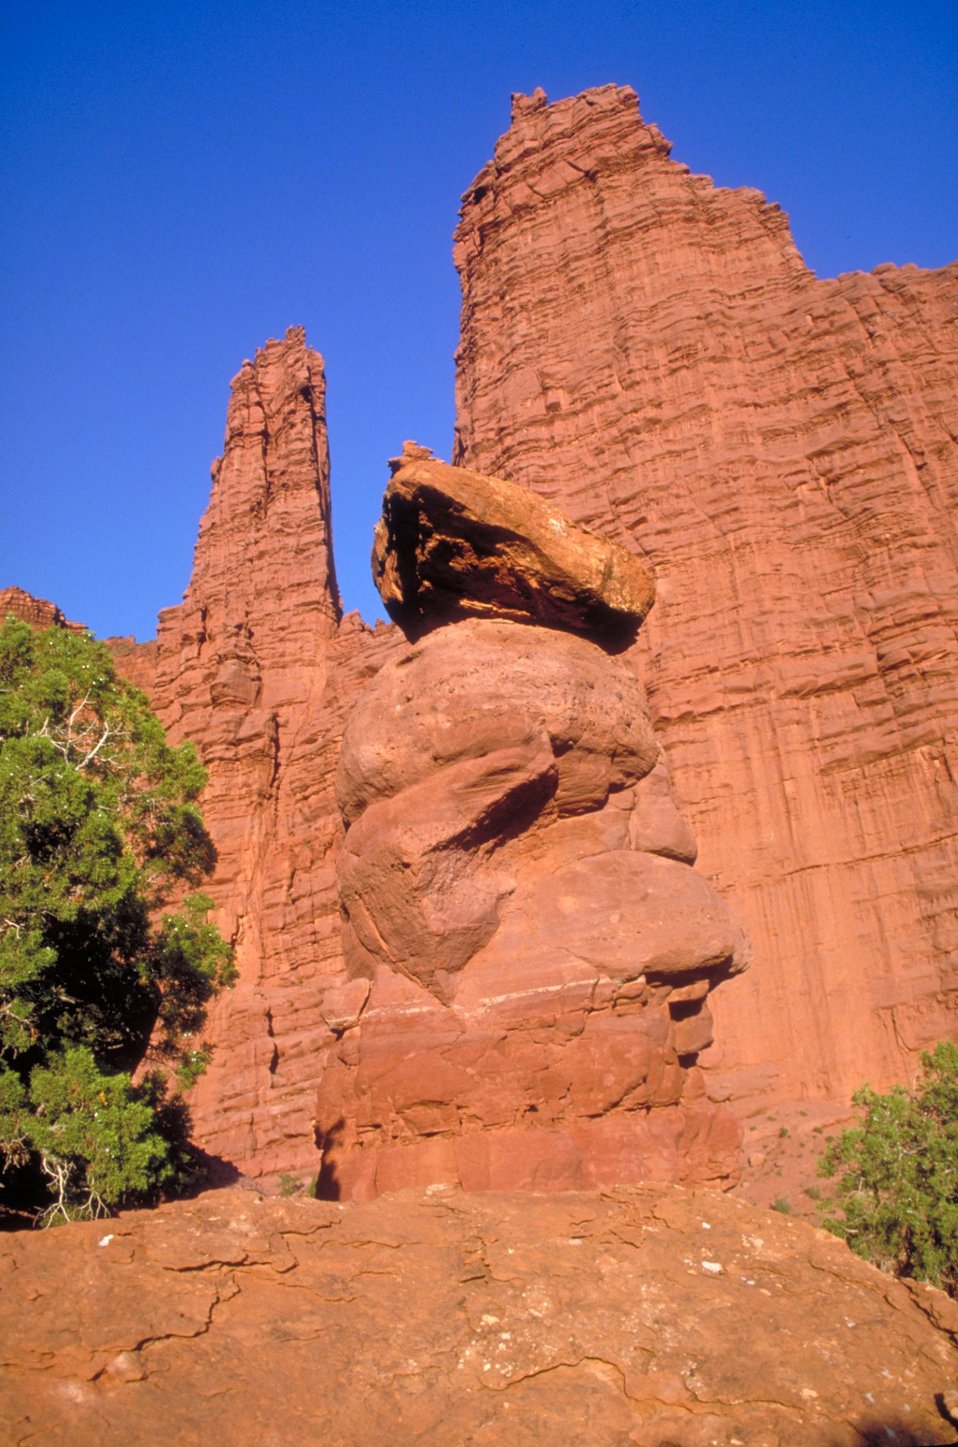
Fisher Towers along the Colorado Riverway near Moab, Utah.